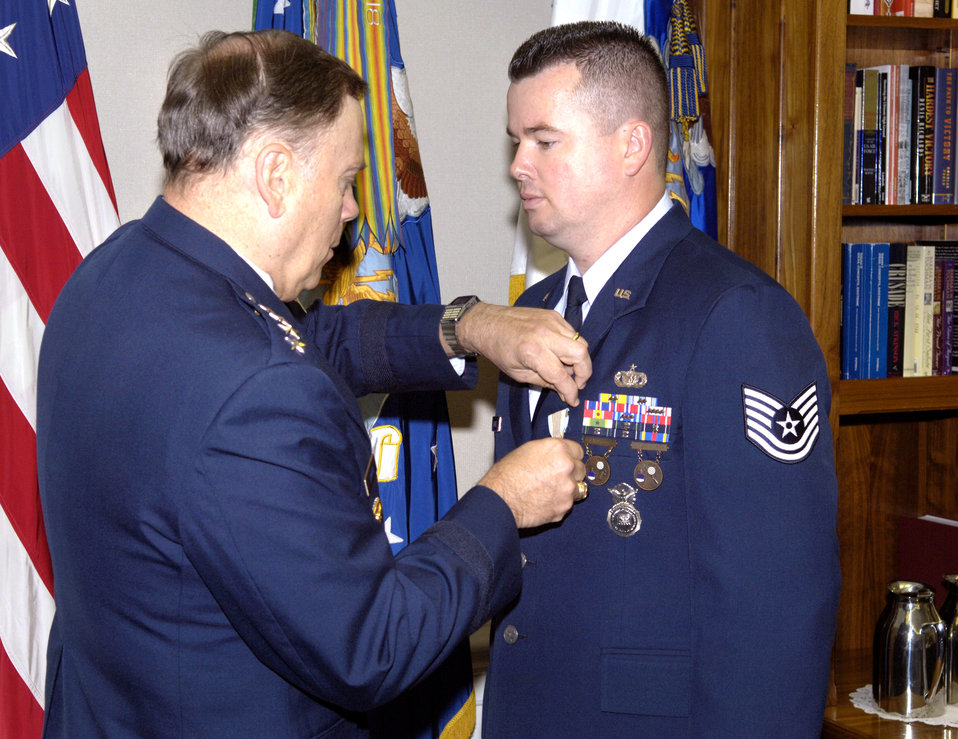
Airman receives medal for water rescue

WASHINGTON -- Air Force Chief of Staff Gen. John P. Jumper presents an Airman's Medal to Tech. Sgt. Michael Downey II during a ceremony here Aug. 31. Sergeant Downey was awarded the medal for displaying exemplary courage and heroism on Oct. 17, 2003, when he swam to a vehicle that had just crashed into a canal, freed the 89-year-old driver who was trapped inside the vehicle and swam her to safety.